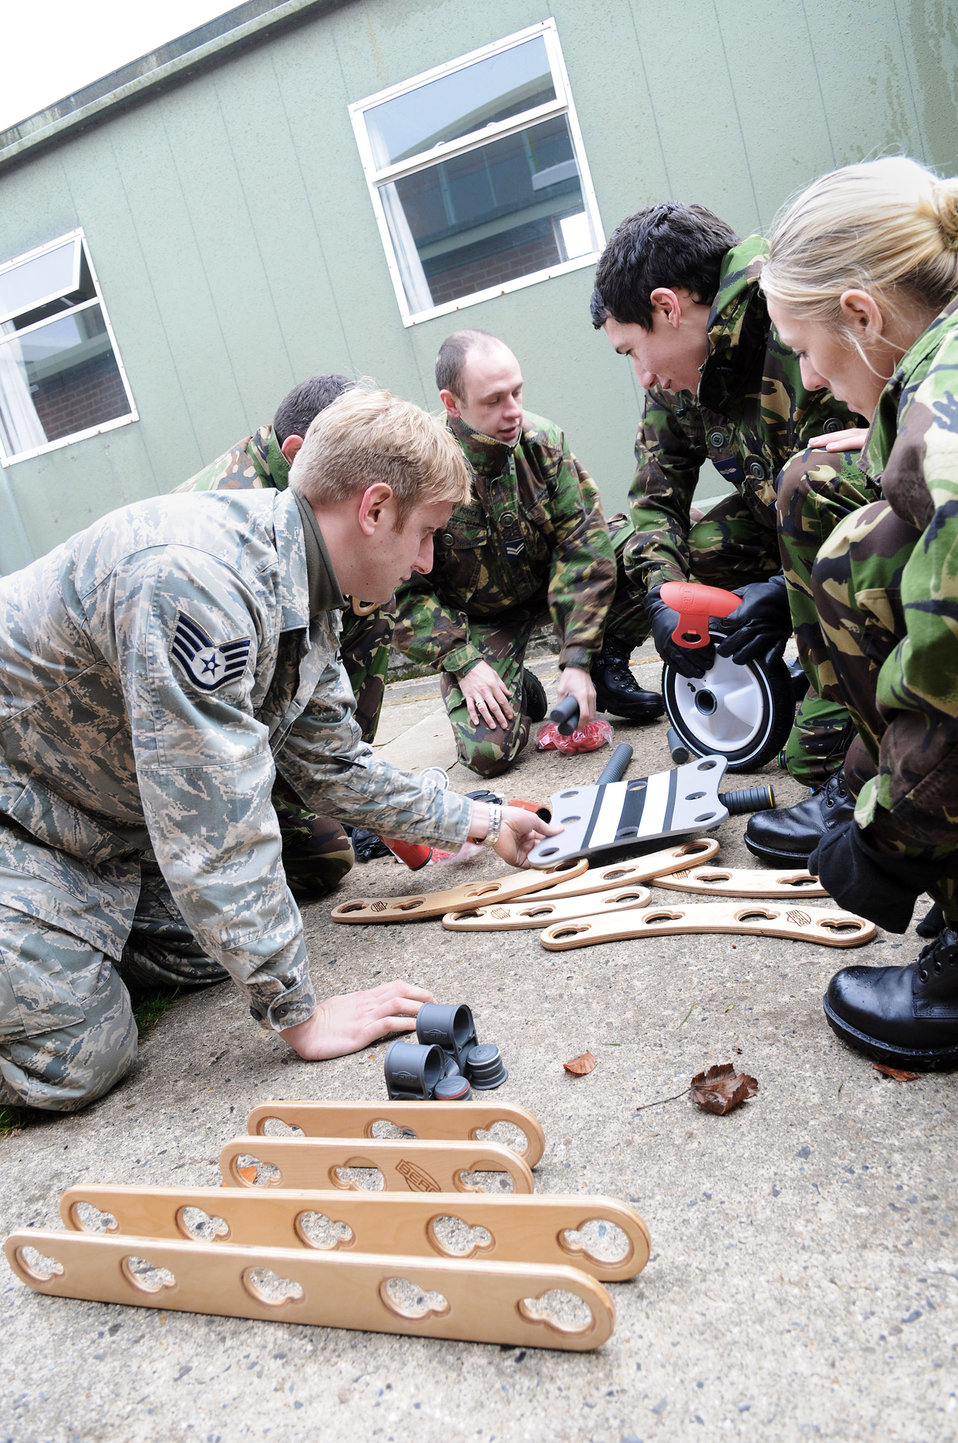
American, British forces join for leadership development

Staff Sgt. Ronald Cooney (left) works with British airmen on a team dynamics exercise during Leadership, Ethos and Air Power Day at Royal Air Force Marham Nov. 9, 2009. The team was attempting to use random items to create a domino effect with little instruction. During the event, more instruction was provided to see if proper planning could help a task become more thoroughly developed. Sergeant Cooney is from the 100th Air Refueling Wing Air Force Smart Operations for the 21st Century office.